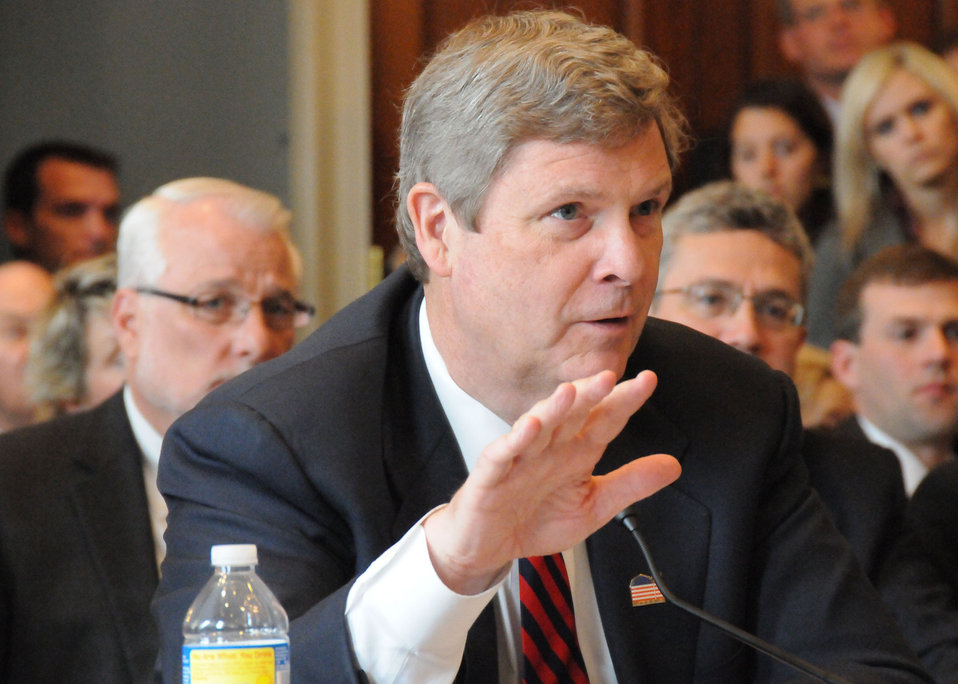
Agriculture Secretary Tom Vilsack testifies before the House Committee on Agriculture at the Longworth House Office Building in Washington, D.C., on Wednesday, April 21, 2010. USDA photo 10di1320-92